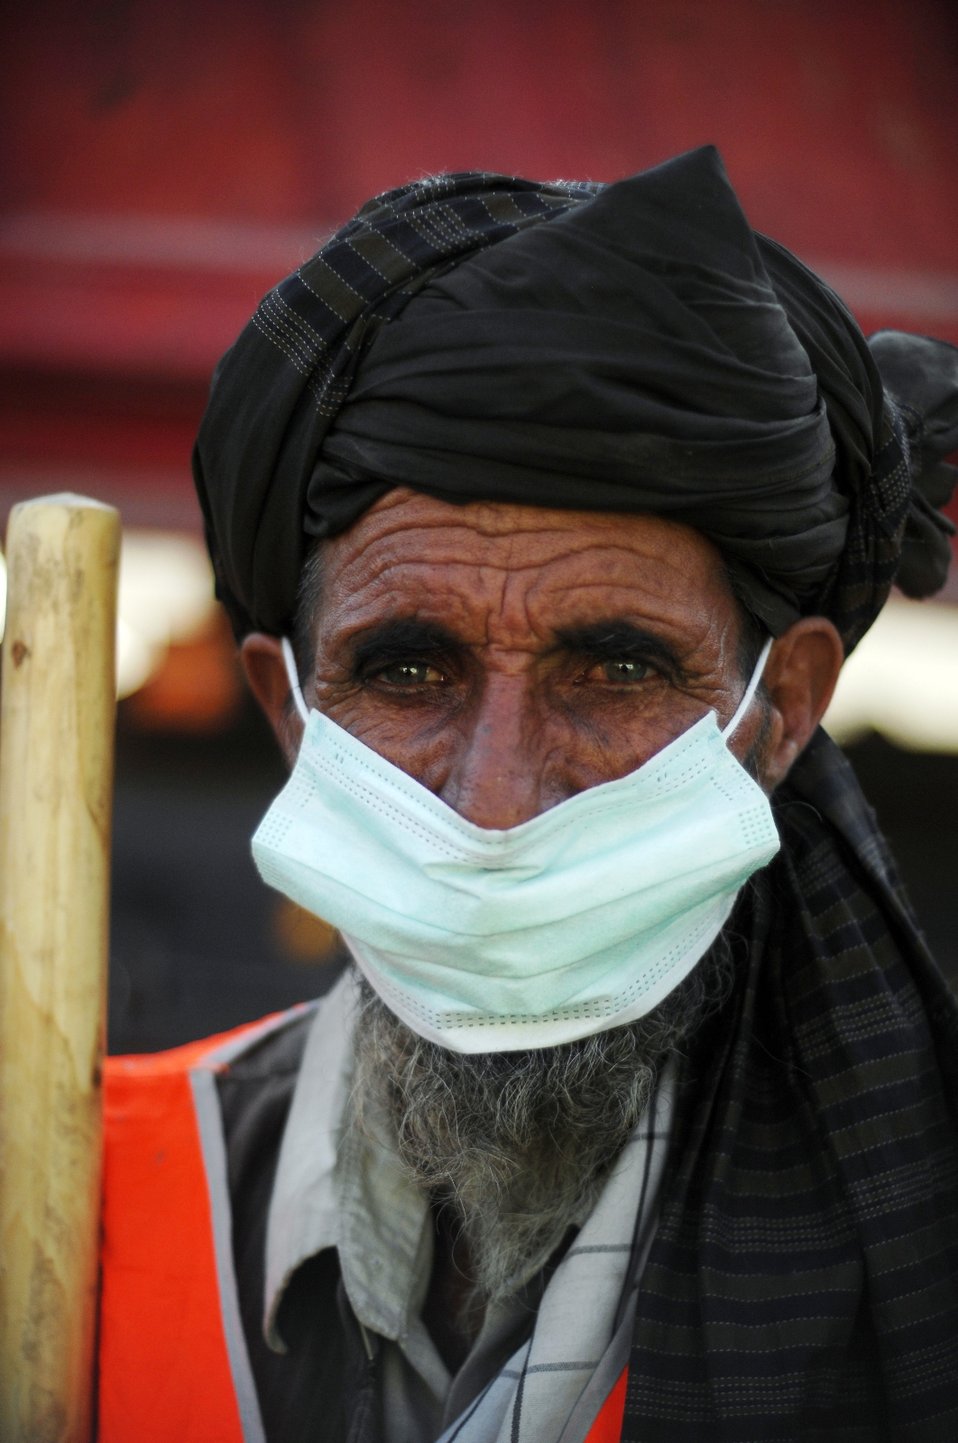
Care31